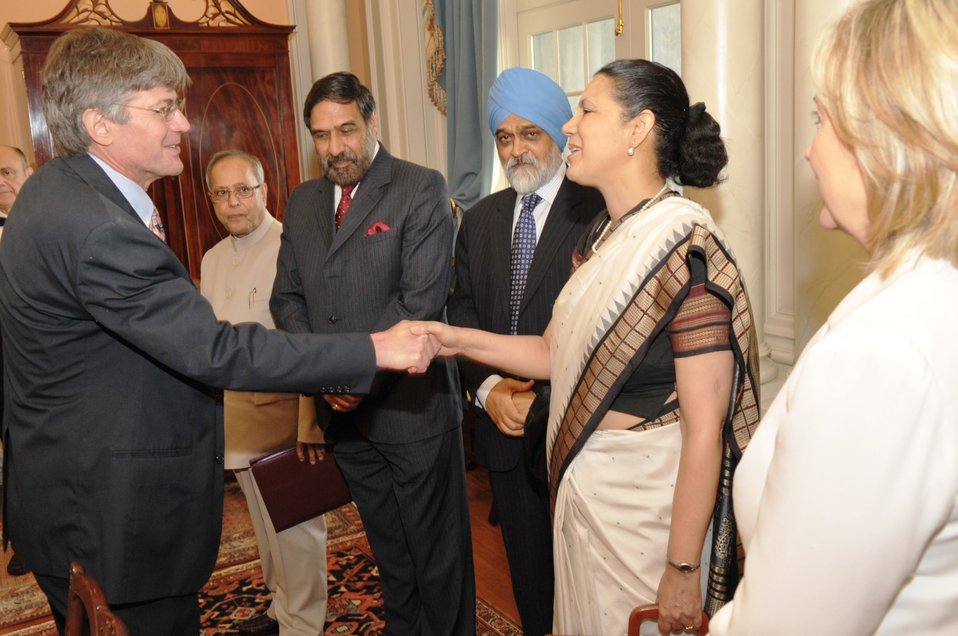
Deputy Secretary Steinberg Shakes Hands With Indian Ambassador to the U.S. Shankar

U.S. Deputy Secretary James Steinberg shakes hands with Indian Ambassador to the U.S. Meera Shankar at the U.S. Department of State in Washington, D.C., on June 22, 2010.